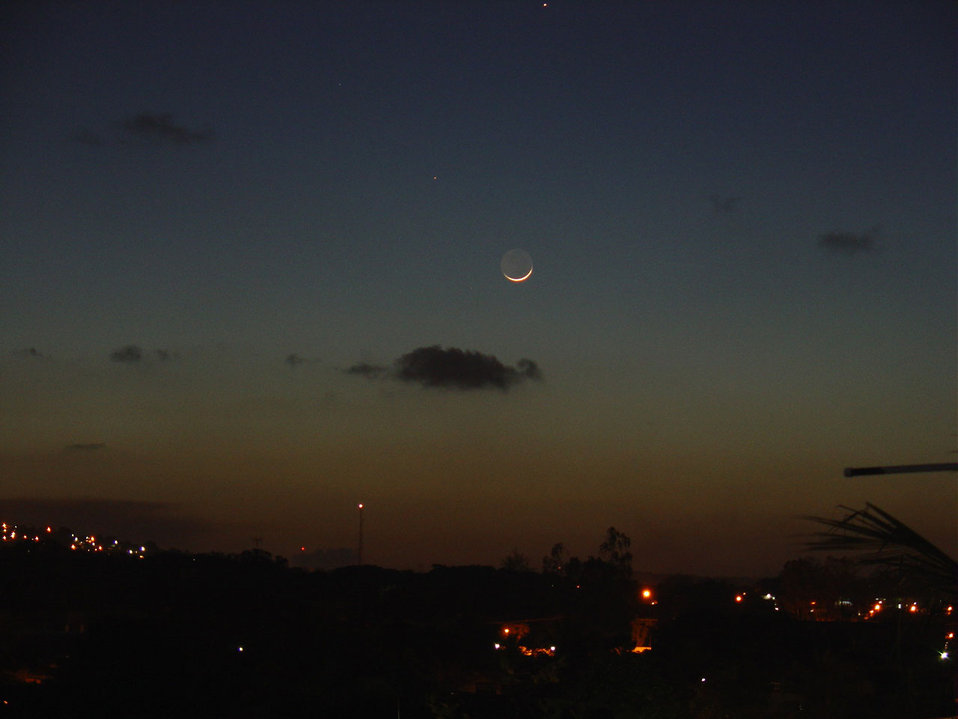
Moon and stars

Moon with stars.